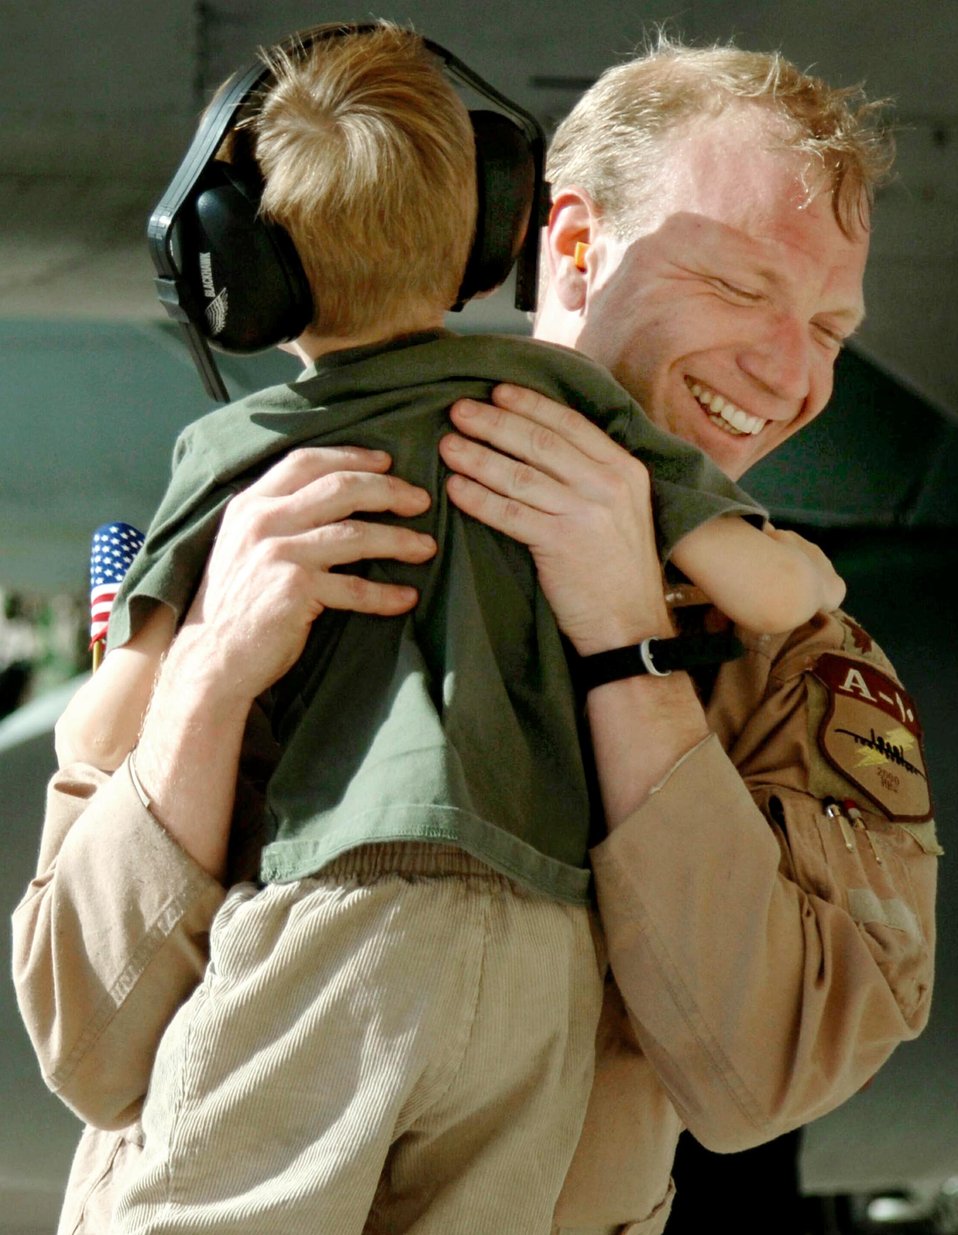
Home again

DAVIS-MONTHAN AIR FORCE BASE, Ariz. (AFPN) -- Maj. Jon Culp hugs his son, Jack, upon his return here Feb. 8. Major Culp is an A-10 Thunderbolt II pilot with the 354th Fighter Squadron. He was deployed to Bagram Air Base, Afghanistan, in support of Operation Enduring Freedom.